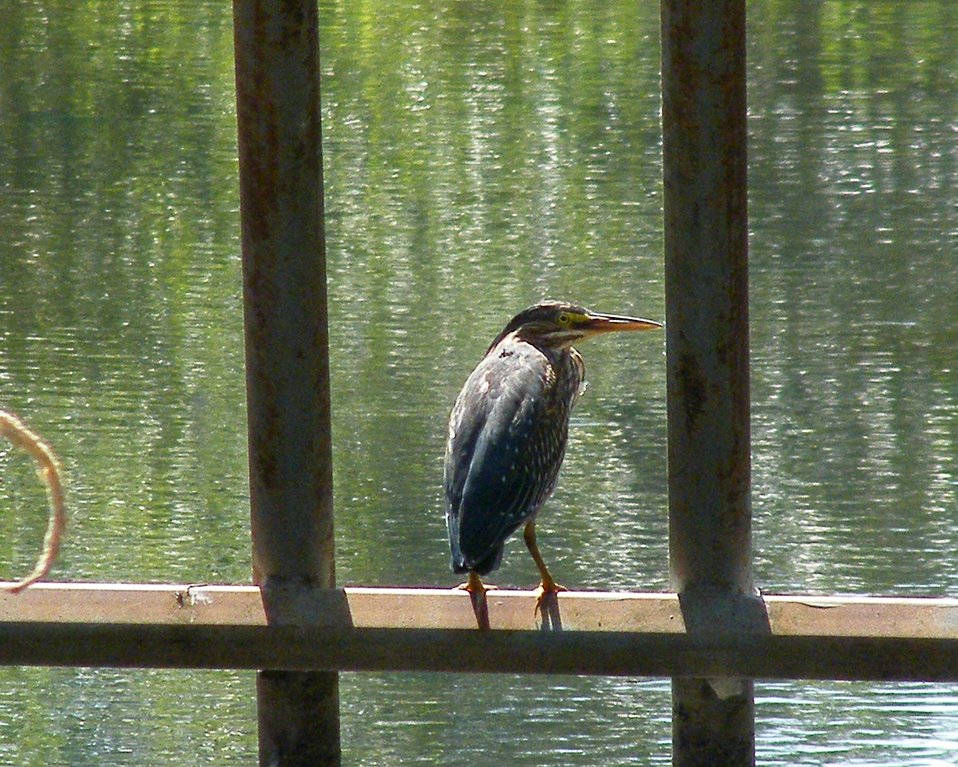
Juvenile Green Heron - Tualatin River NWR